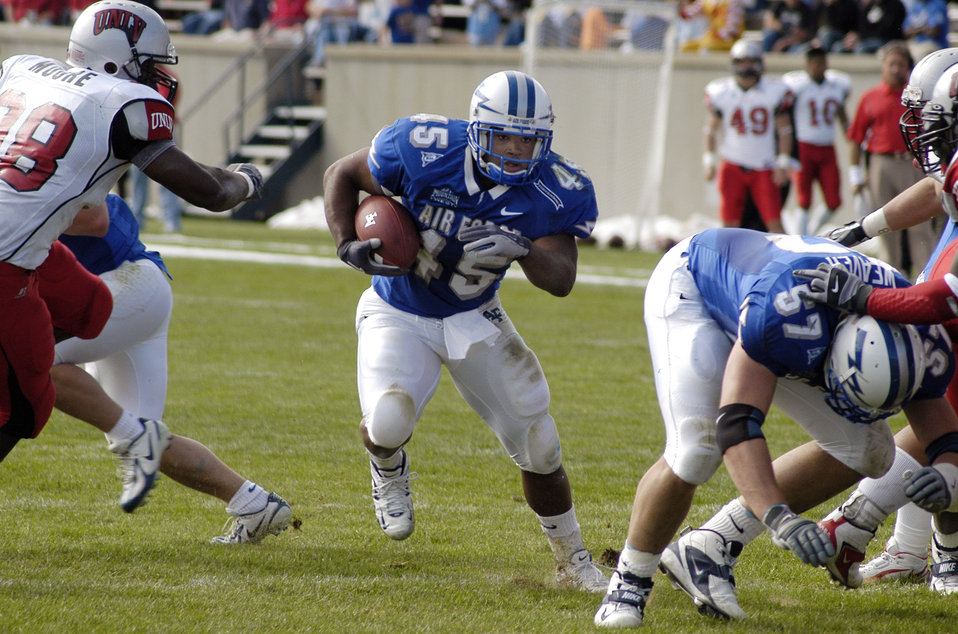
Falcons beat UNLV

U.S. AIR FORCE ACADEMY, Colo. -- Falcon fullback Ryan Williams, 45, runs to daylight made by offensive tackle Ross Weaver, 57, as UNLV defensive end Leon Moore, 98, closes in.